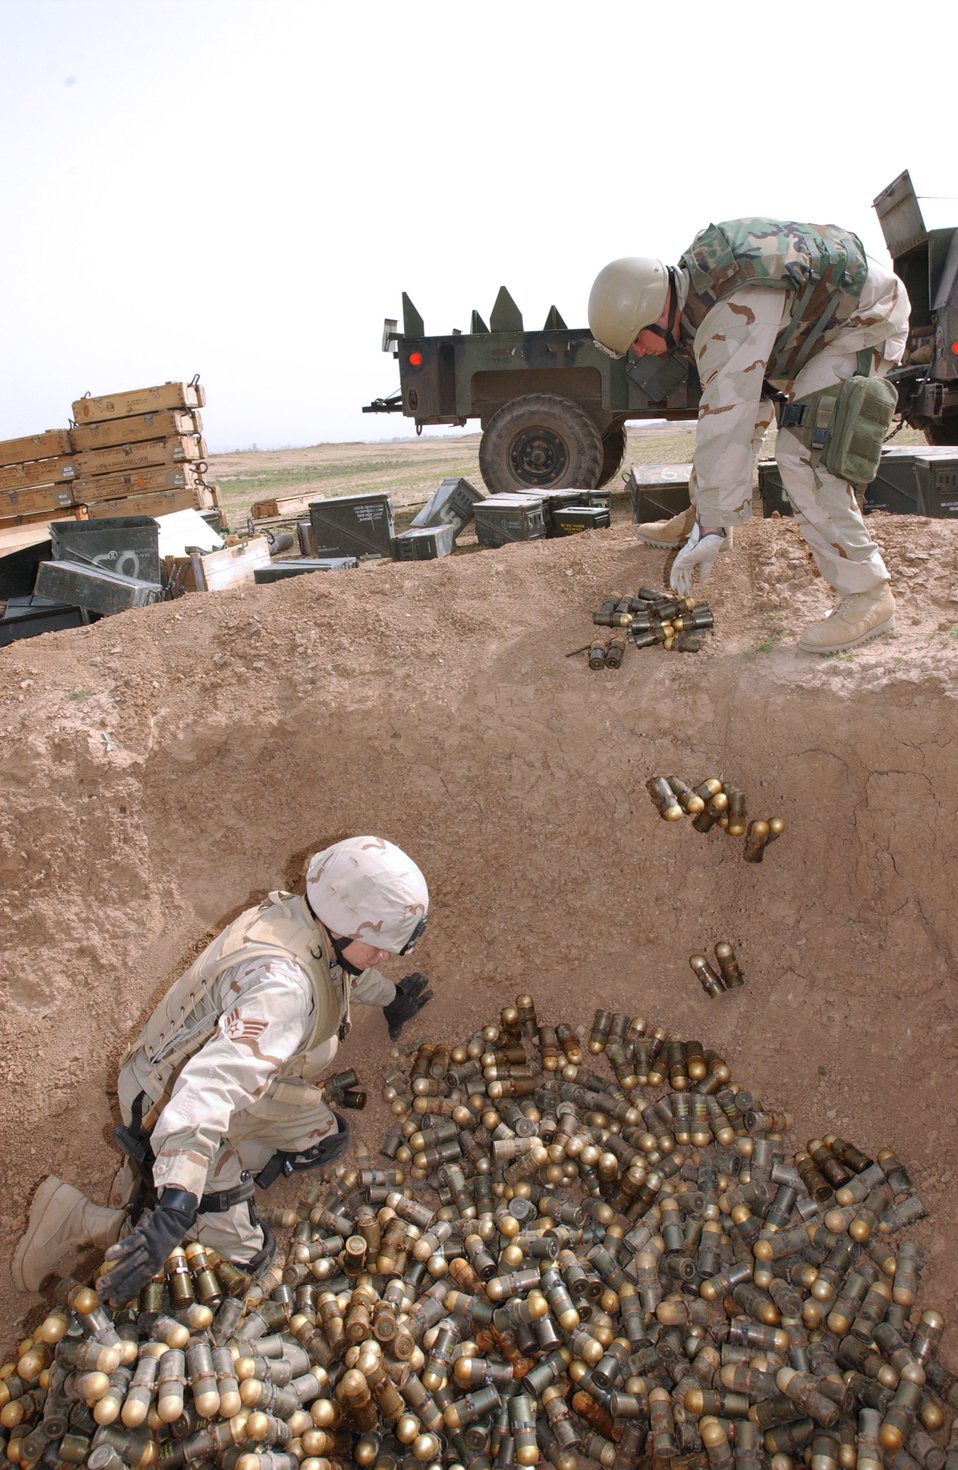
Having a blast

KIRKUK, Iraq -- Staff Sgt. Mark Gostomski places grenades in a pit for disposal while Senior Airman Angela Olguin stacks the items. The Airmen are explosives ordnance disposal specialists assigned to the 506th Expeditionary Civil Engineer Squadron at nearby Kirkuk Air Base.